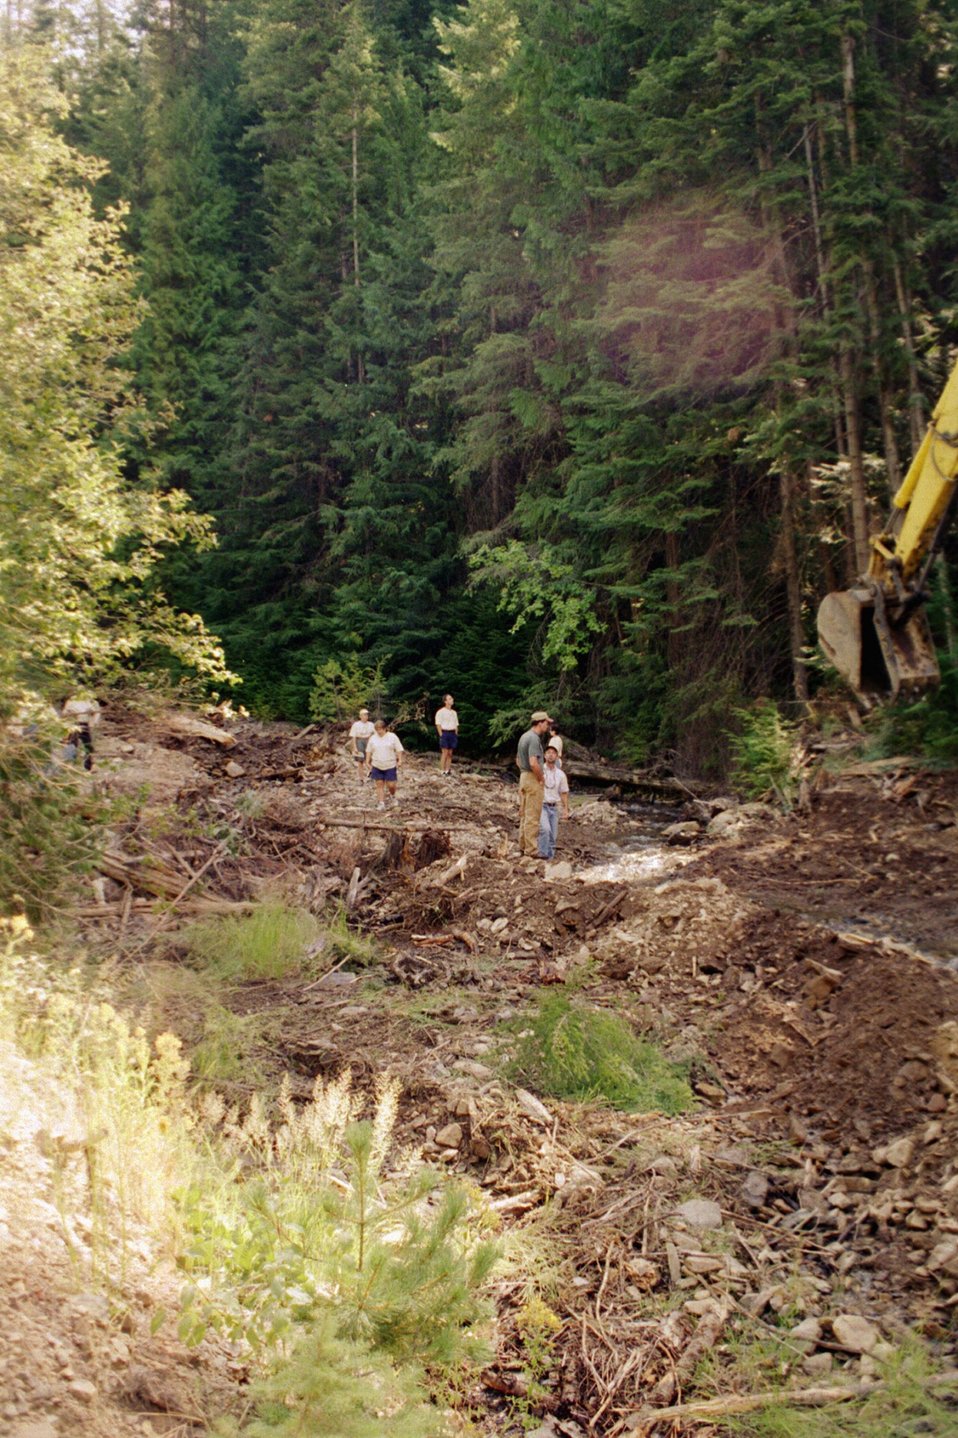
Riparian Area Stream Restoration from mining damage near Pinecreek Couer D'Alene Field Office UCSC Upper Columbia Salmon Clearwater District